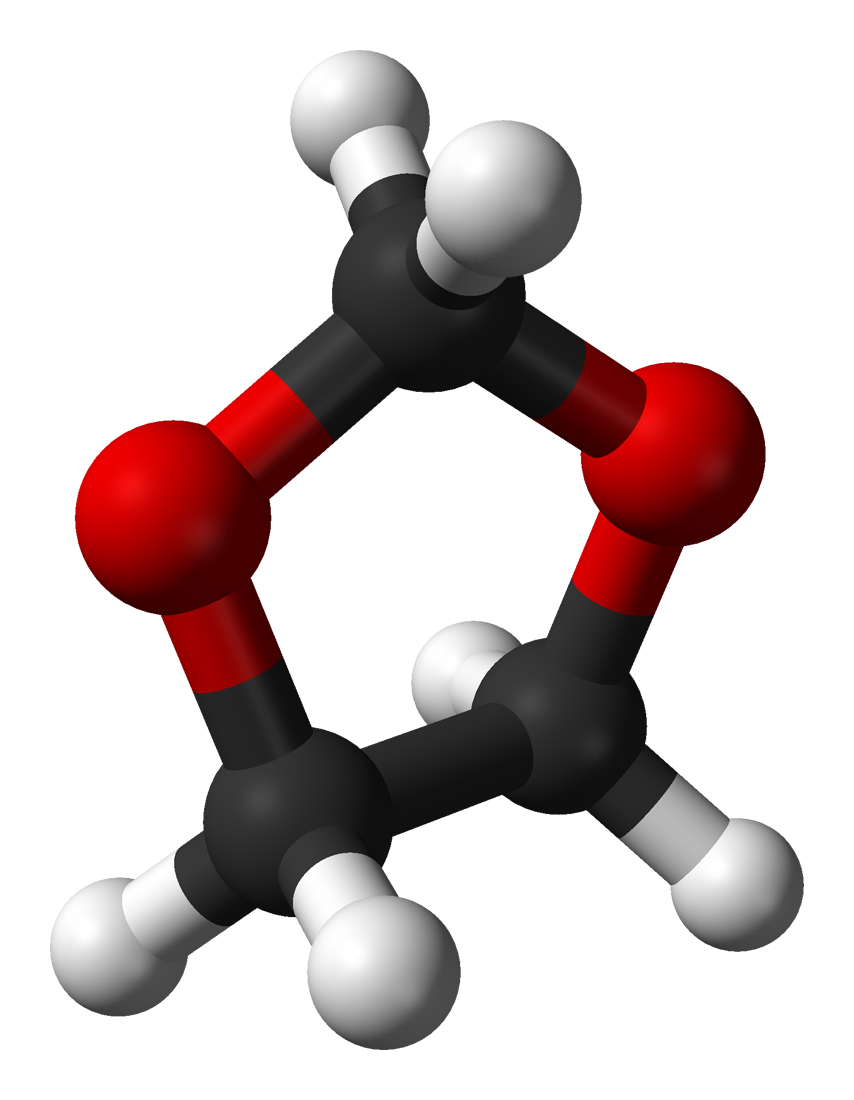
Ball-and-stick model of the 1,3-dioxolane molecule. Structure calculated in Spartan using the HF/3-21G basis set.